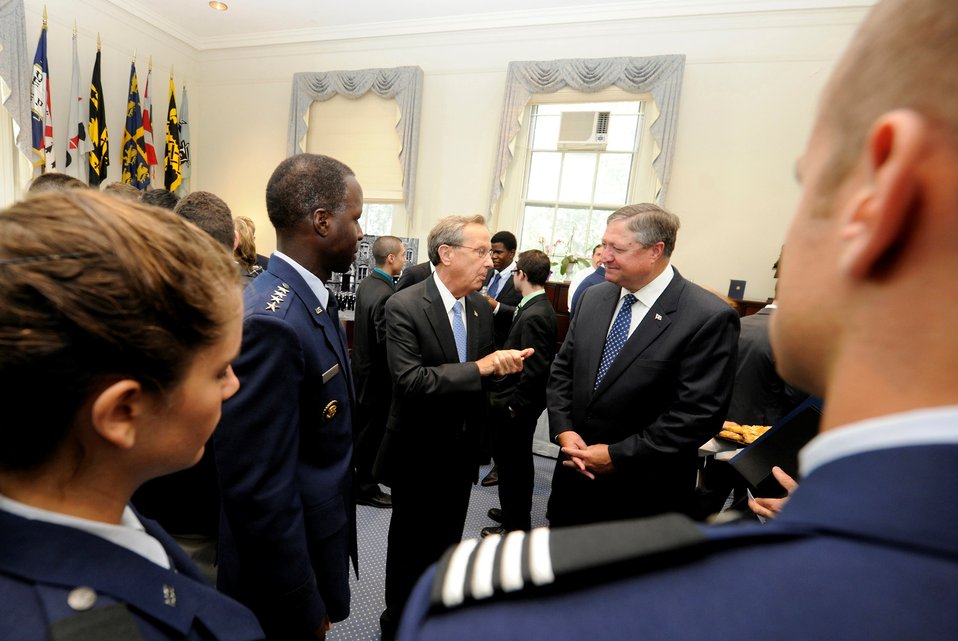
SECAF at Yale ROTC detachment

(From left) Gen. Edward Rice Jr., Richard Levin and Secretary of the Air Force Michael Donley take questions from University of Connecticut Air Force ROTC cadets following a signing ceremony Sept. 12, 2011, at Yale University in New Haven, Conn. During the ceremony, Donley and Levin signed an agreement to establish an Air Force ROTC detachment on the campus, which marks a renewed Air Force presence at Yale University. Rice is the commander of Air Education and Training Command and Levin is the president of Yale.